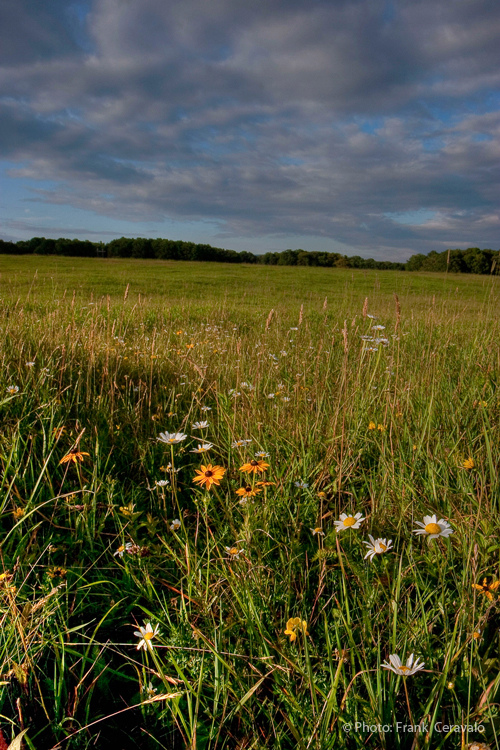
Summer Wildflowers

Shadows dance across the faces of wildflowers along Middle Valley Trail.